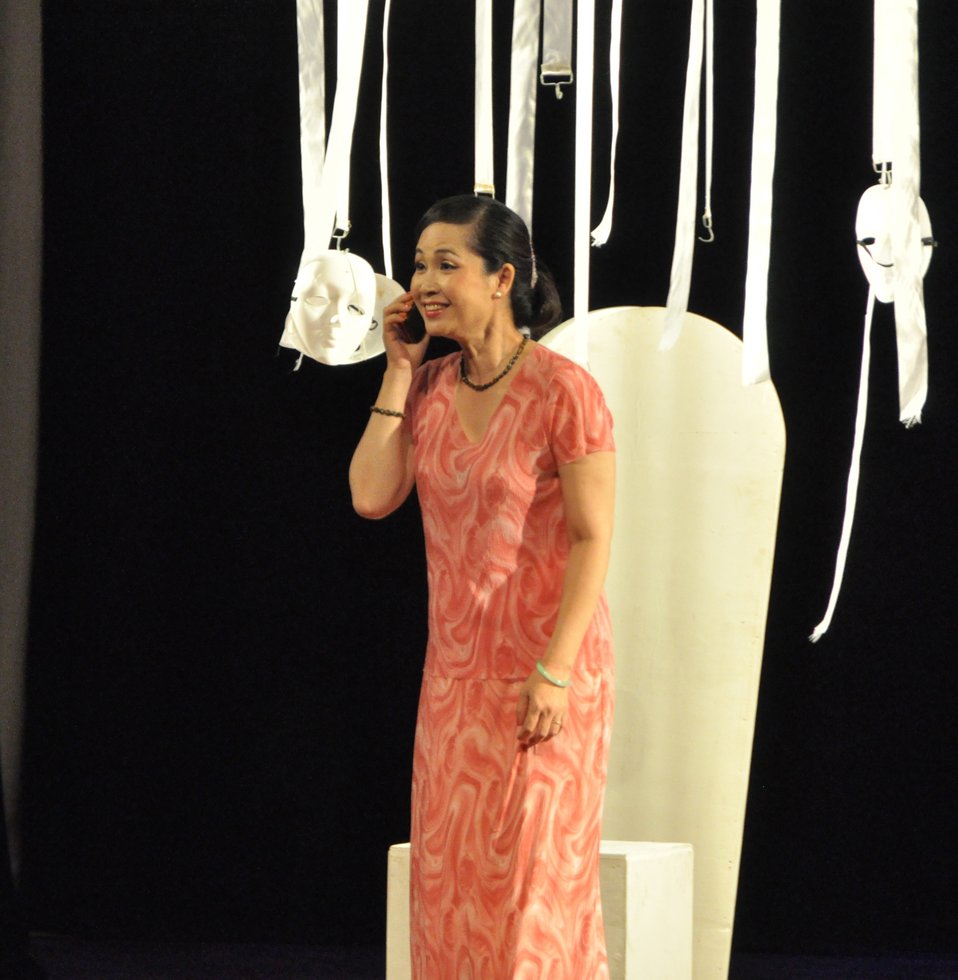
PEPFAR Musical Questions and Exclamations

Hanoi, May 17, 2013